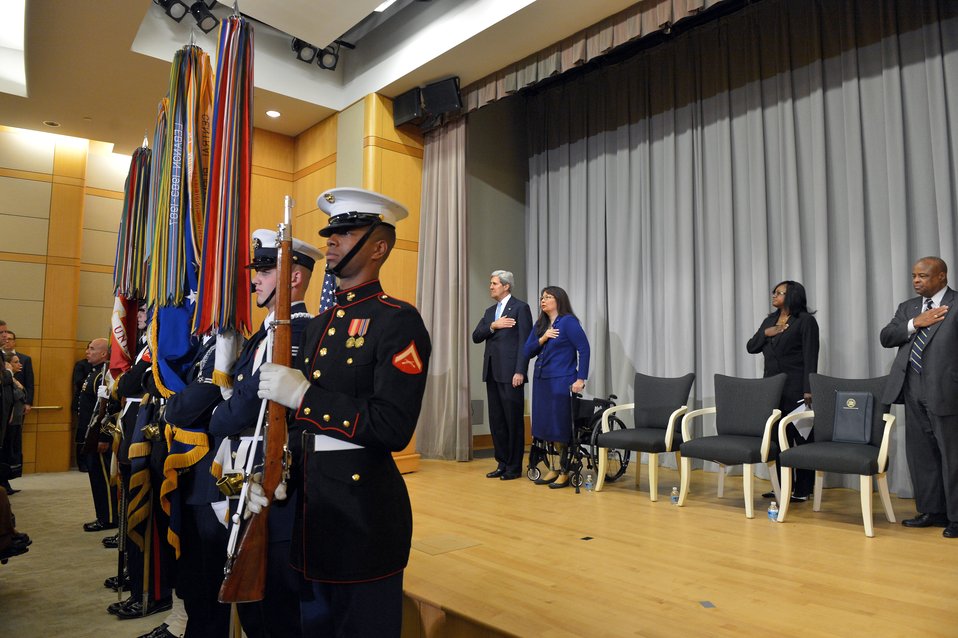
Secretary Kerry Pays Tribute to Veterans

U.S. Secretary of State John Kerry, with U.S. Representative and decorated Iraq veteran Tammy Duckworth of Illinois, pays tribute to veterans who answered the call to service in remarks commemorating Veterans Day during an event hosted by the Office of Civil Rights at the U.S. Department of State on November 13, 2013.